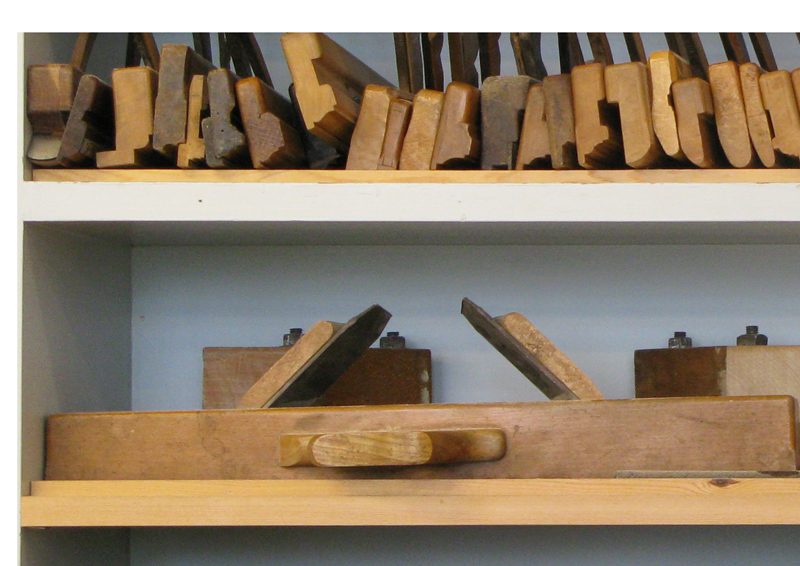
Plane with two irons, working in both directions. On upper shelf: profile planes. Dansk: Radikalhøvl (nederst) set på nationalmuseets møbelkonserveringsværksted i Brede.